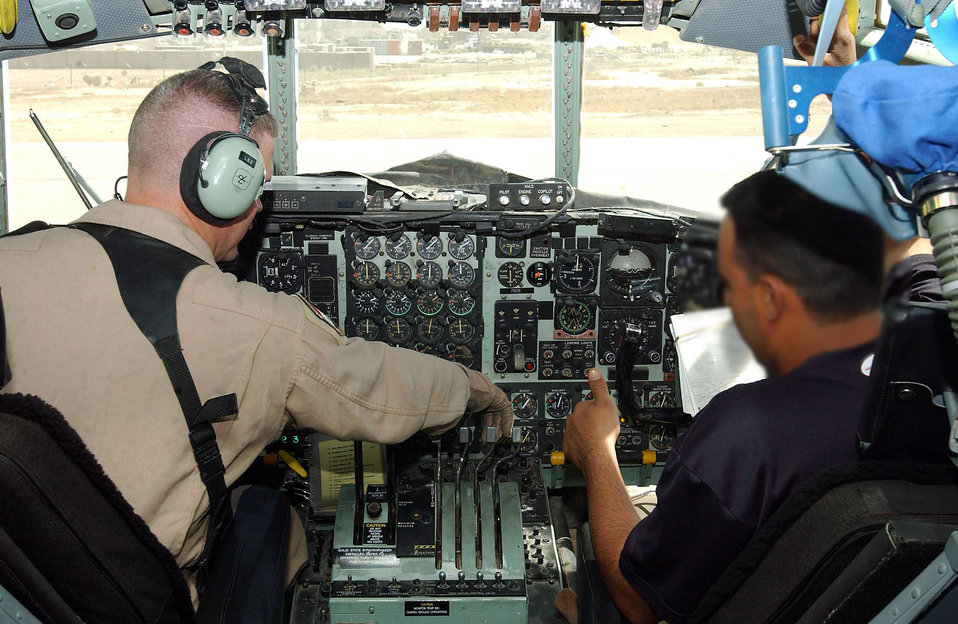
Airmen teach C-130 ops to Iraqi students, learn about sacrifice

ALI BASE, Iraq -- Master Sgt. Tommy Lee reviews the instruments on a C-130 Hercules control panel with one of his Iraqi air force students. He is among more than 30 instructors teaching more than 100 Iraqi airmen how to fly and maintain C-130s here. Sergeant Lee is a flight engineer instructor assigned to the 777th Expeditionary Airlift Squadron and is deployed from Little Rock Air Force Base, Ark. The student's face is blurred for his protection.